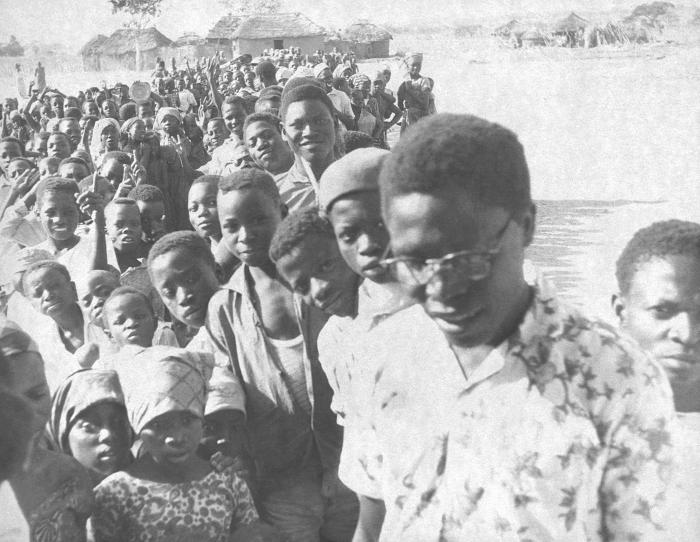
These children are in line to receive their smallpox vaccinations during Nigeria's 1968 Smallpox Eradication Program.